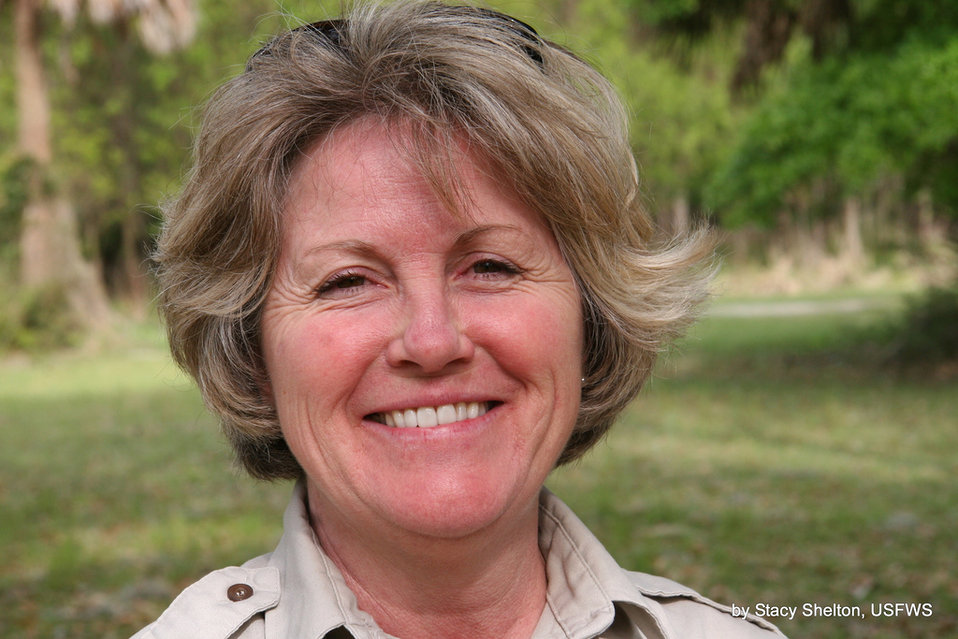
Raye Nilius is project Leader of the South Carolina Low Country Refuge Complex.